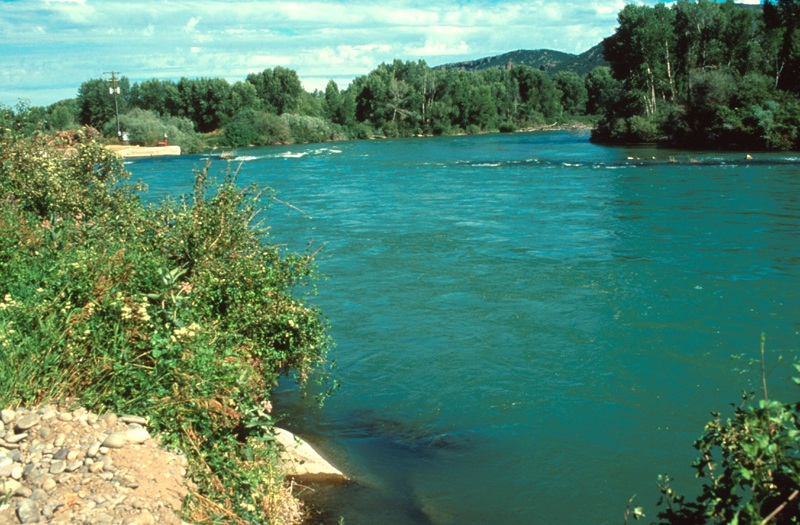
South Fork of the Snake River